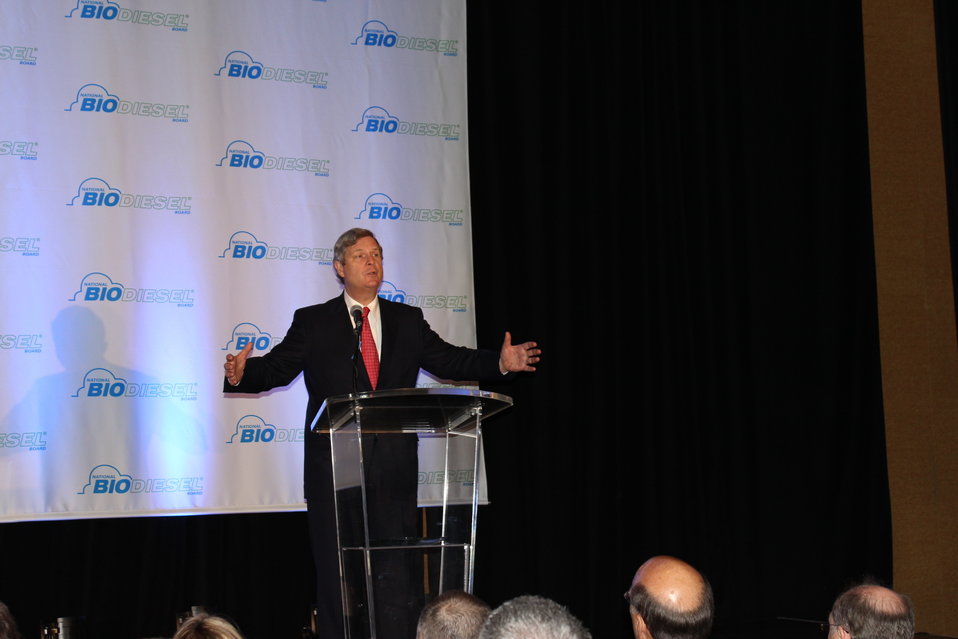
Agriculture Secretary Tom Vilsack speaks at the National Biodiesel Conference in Las Vegas, NV on Feb. 7, 2013. Secretary Vilsack discussed the unlimited opportunity for America to produce more homegrown energy through the development and innovation of advanced biofuels and the significant contributions biofuels and other biobased products have made to America’s economic and energy security, as well as the importance of supporting the industry through research, investment and increased collaboration.